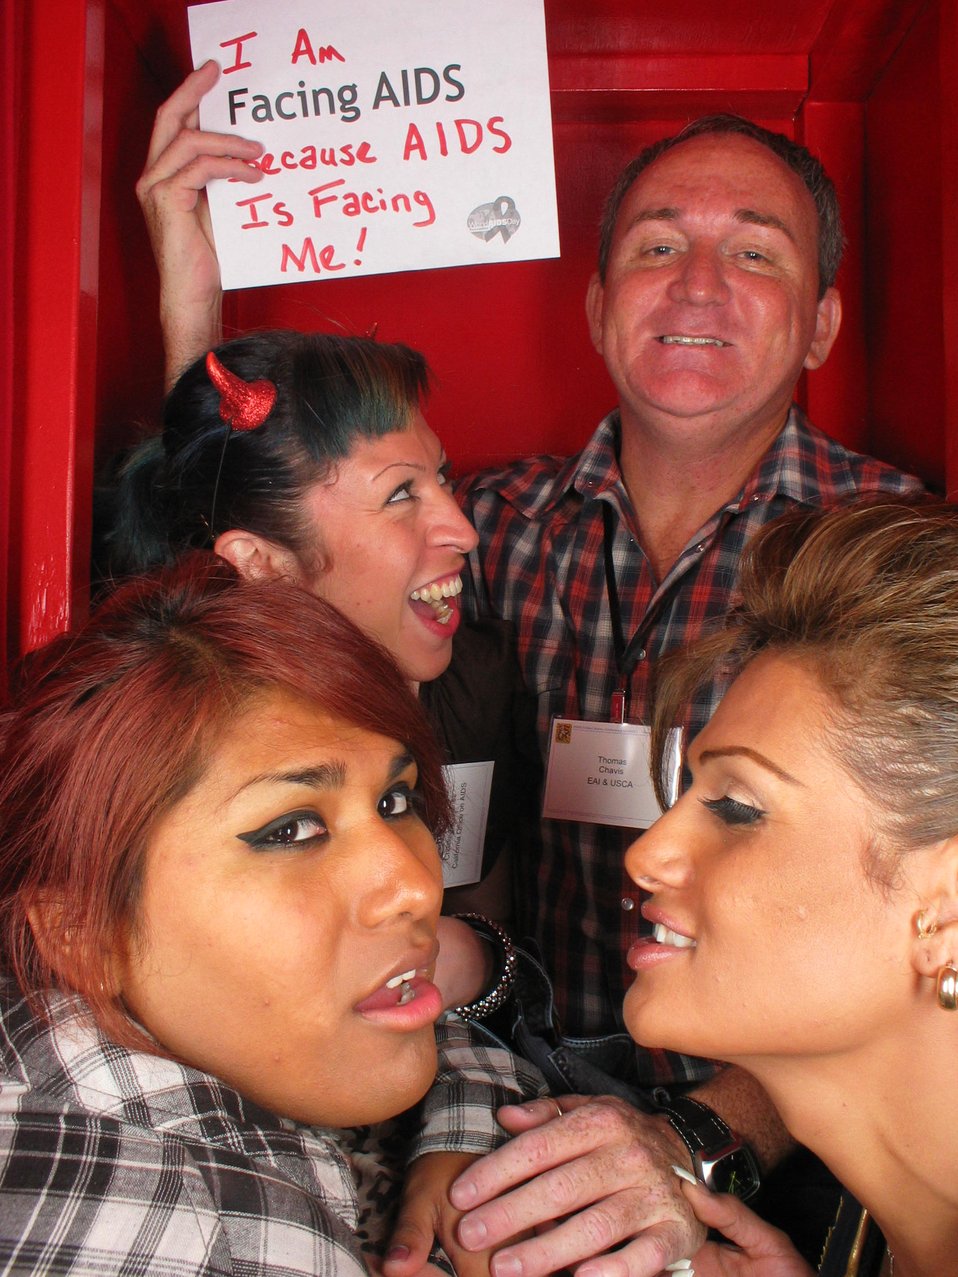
I am Facing AIDS because AIDS is facing me!